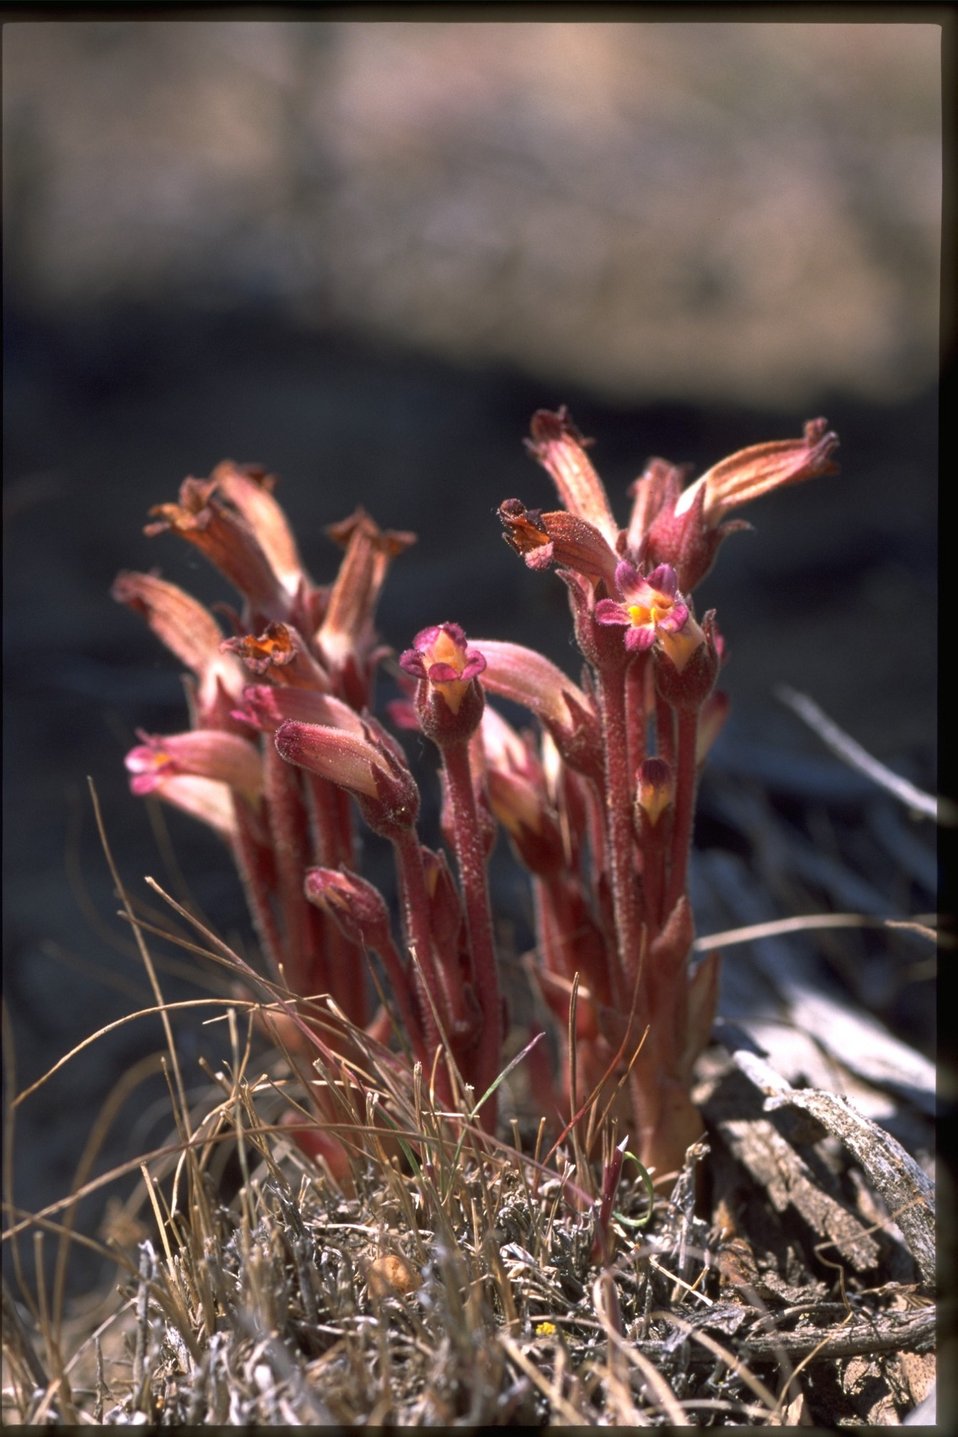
Medium shot of Orobanche.